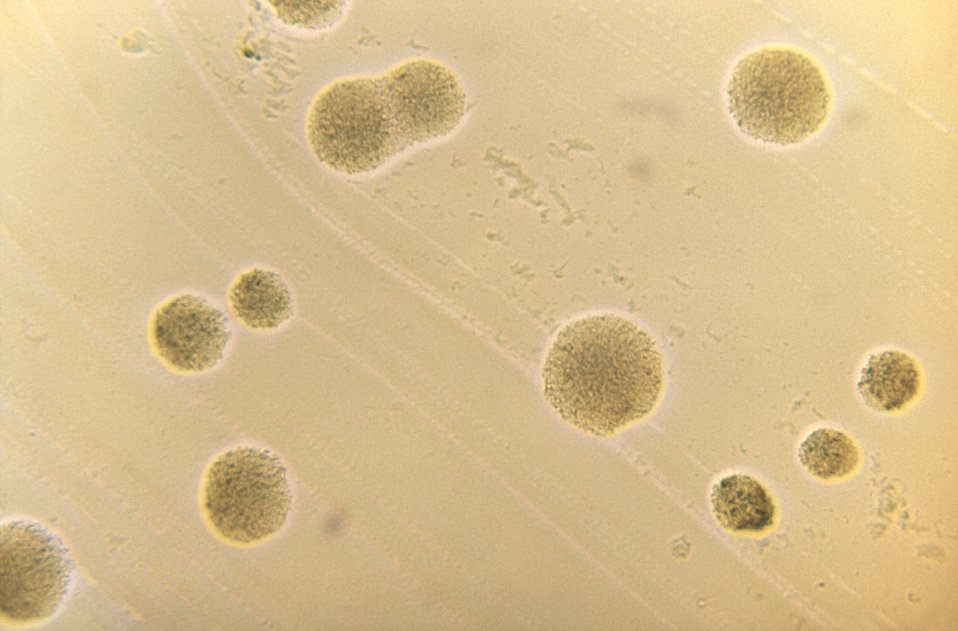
Magnified 125X, this photomicrograph revealed some of the morphology exhibited by a number of Actinomyces viscosus microcolonies that had been cultured in a Petri dish atop a medium of brain heart infusion agar (BHIA), for a 48hr period.